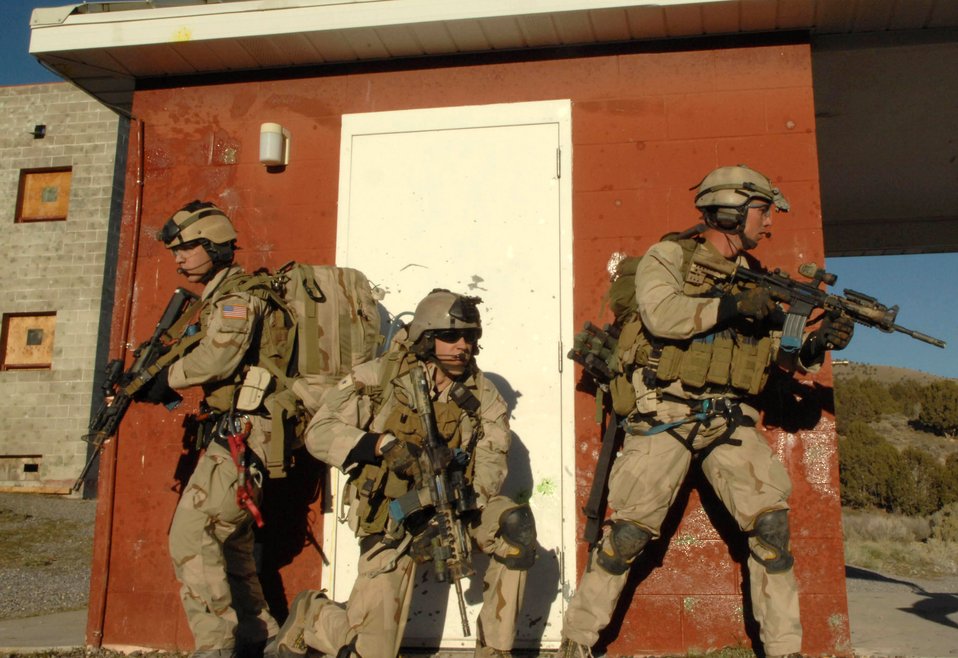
To the rescue

Pararescuemen practice an urban village assault to extract a downed pilot during a combat search and rescue integration exercise Nov. 8 at Camp Williams, Utah. The pararescuemen are from the 58th Rescue Squadron, Nellis Air Force Base, Nev.